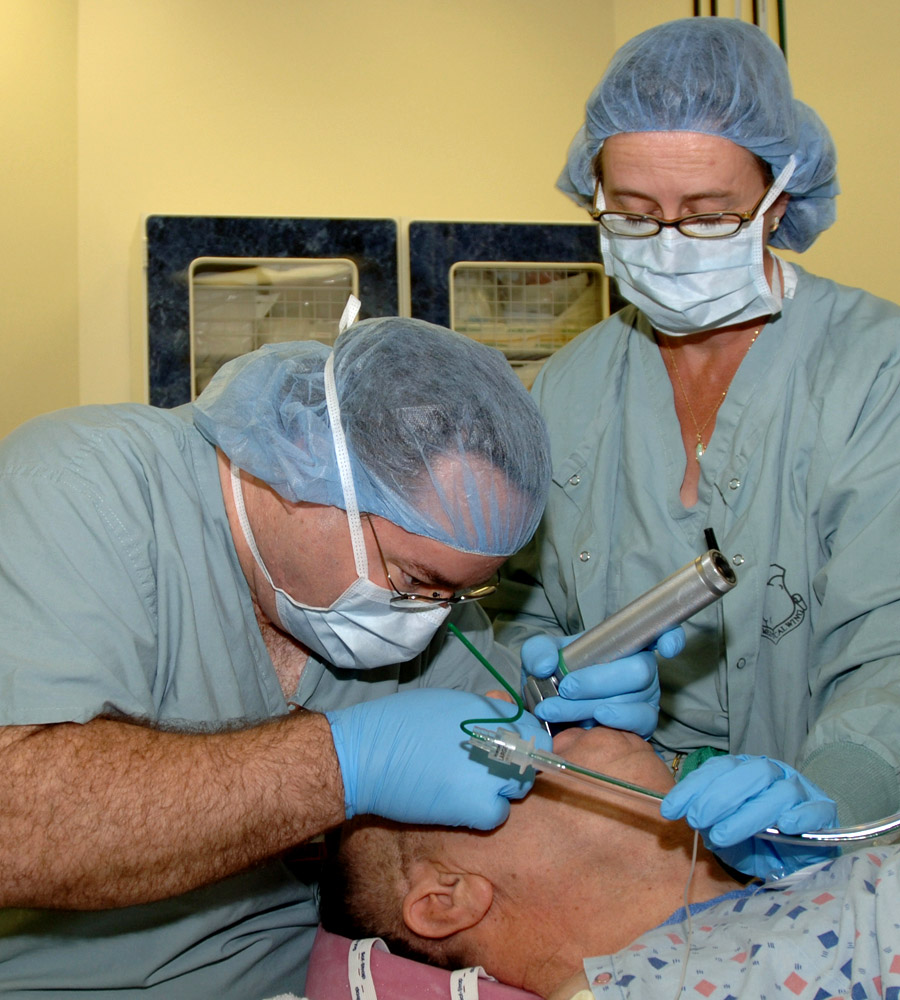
Air Force trauma specialists train civilian counterparts

Penelope Henderson supervises Shawn Salter put in an intubation tube in the operating room at Wilford Hall Medical Center Feb. 8 in San Antonio. Staff members from the trauma department at Wilford Hall are training civilian medical personnel on emergency airway management skills as part of an agreement with San Antonio AirLife. Ms. Henderson is an anesthetist with the 59th Surgical Operations Squadron, and Mr. Salter is the chief flight nurse and director of clinical operations for San Antonio Airlife.